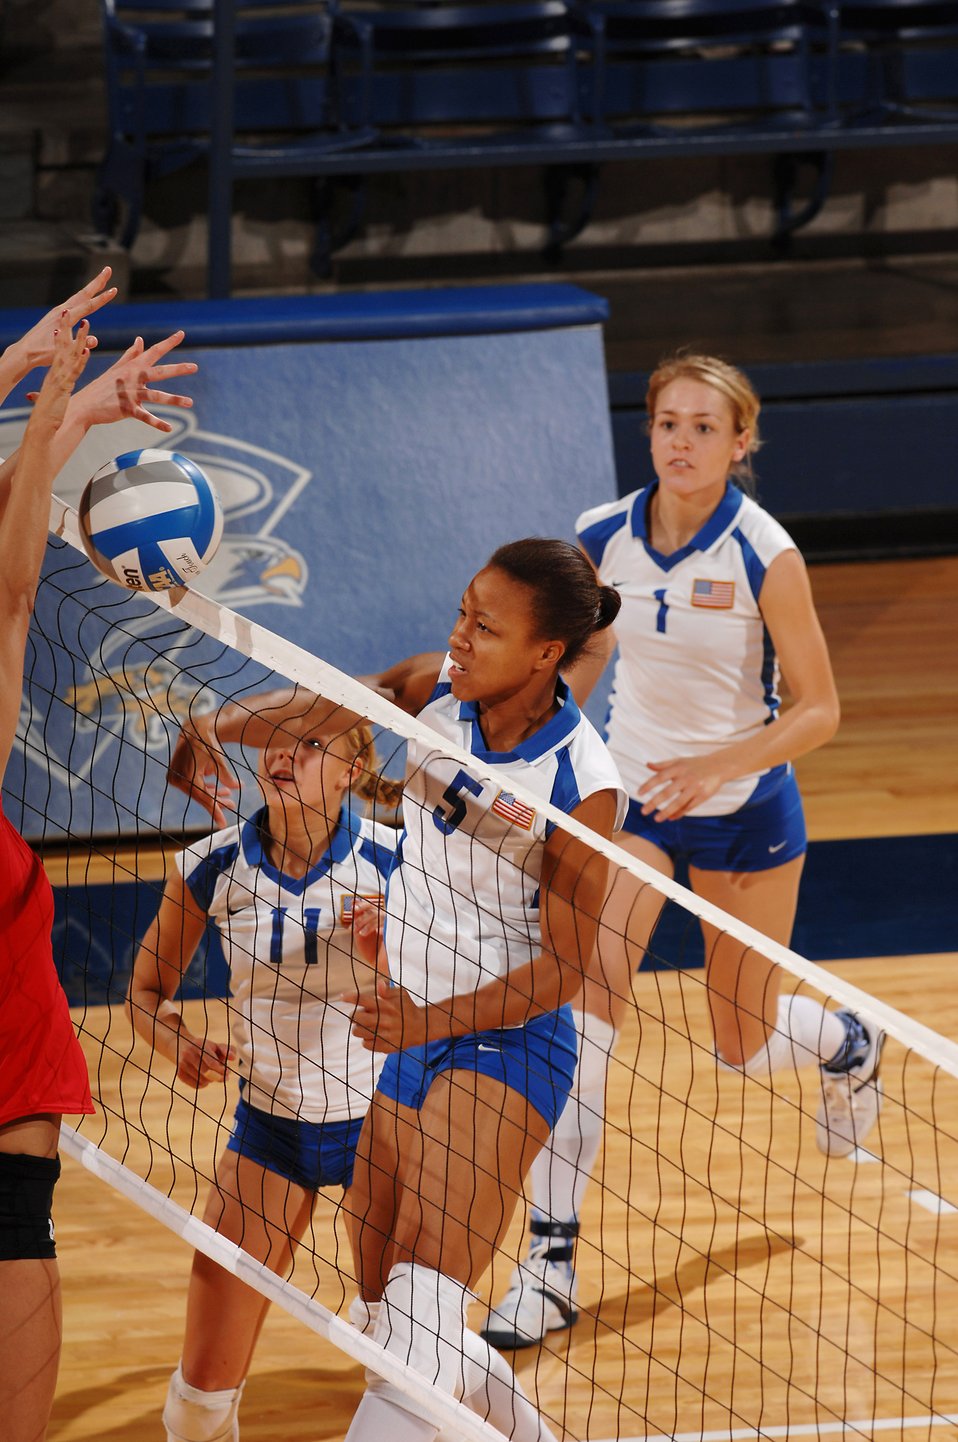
Volleyball: Falcons suffer tough losses

U.S. Air Force Academy sophomore Jocelyn Booker's hit is met with blocking hands against Utah in volleyball action as the Falcons were swept in three sets Sept. 28 at Clune Arena at the Academy in Colorado. The Falcons return to the road to take on the San Diego State Aztecs Oct. 4 before heading to face the University of Nevada, Las Vegas Oct. 6.